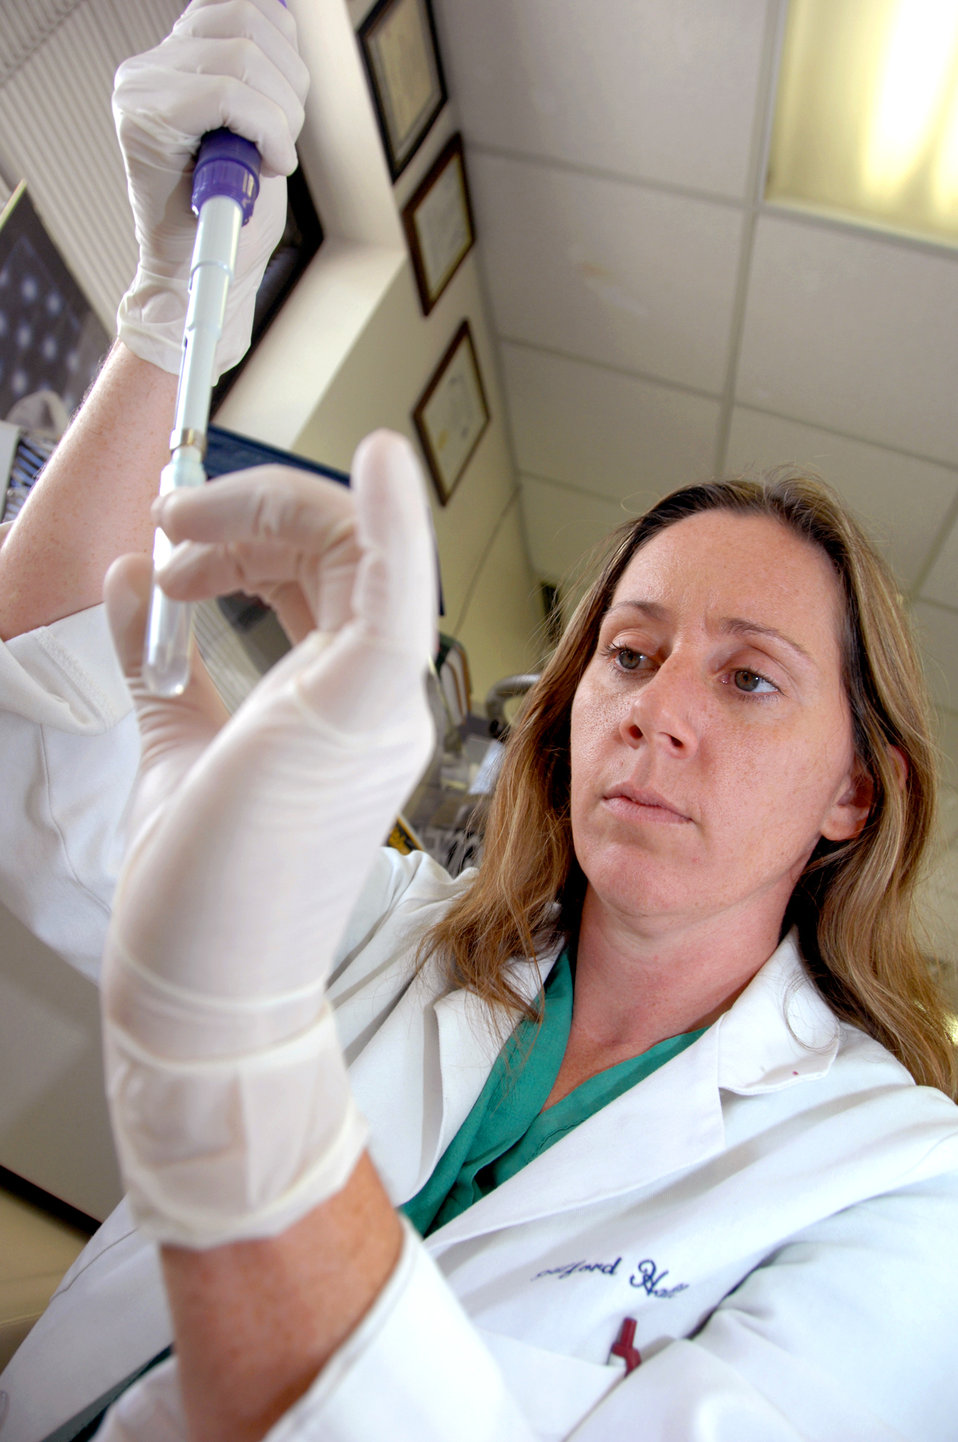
Testing one cell at a time

Capt. (Dr.) Heather Hancock performs lab tests July 14, 2010, to determine cell function during a vascular injury research study. She is a general surgery resident and research fellow with the 59th Medical Wing Clinical Research Division at Lackland Air Force Base, Texas.